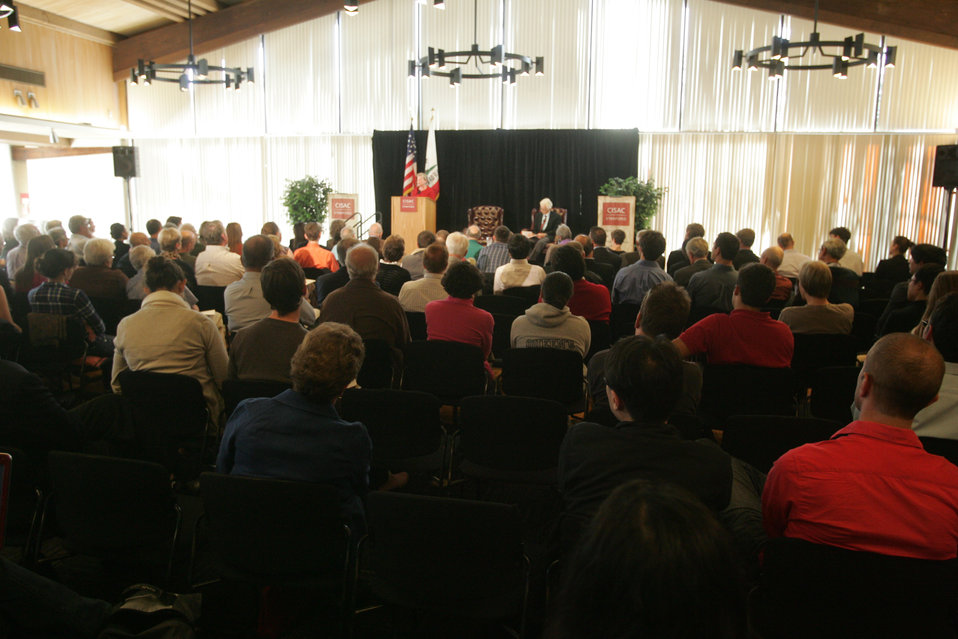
Assistant Secretary Gottemoeller Discusses Arm Control

Assistant Secretary of State for Arms Control, Verification and Compliance Rose Gottemoeller discusses 'Arms Control in the Information Age' at the Center for International Security and Cooperation (CISAC) in Stanford, California, on October 27, 2011.